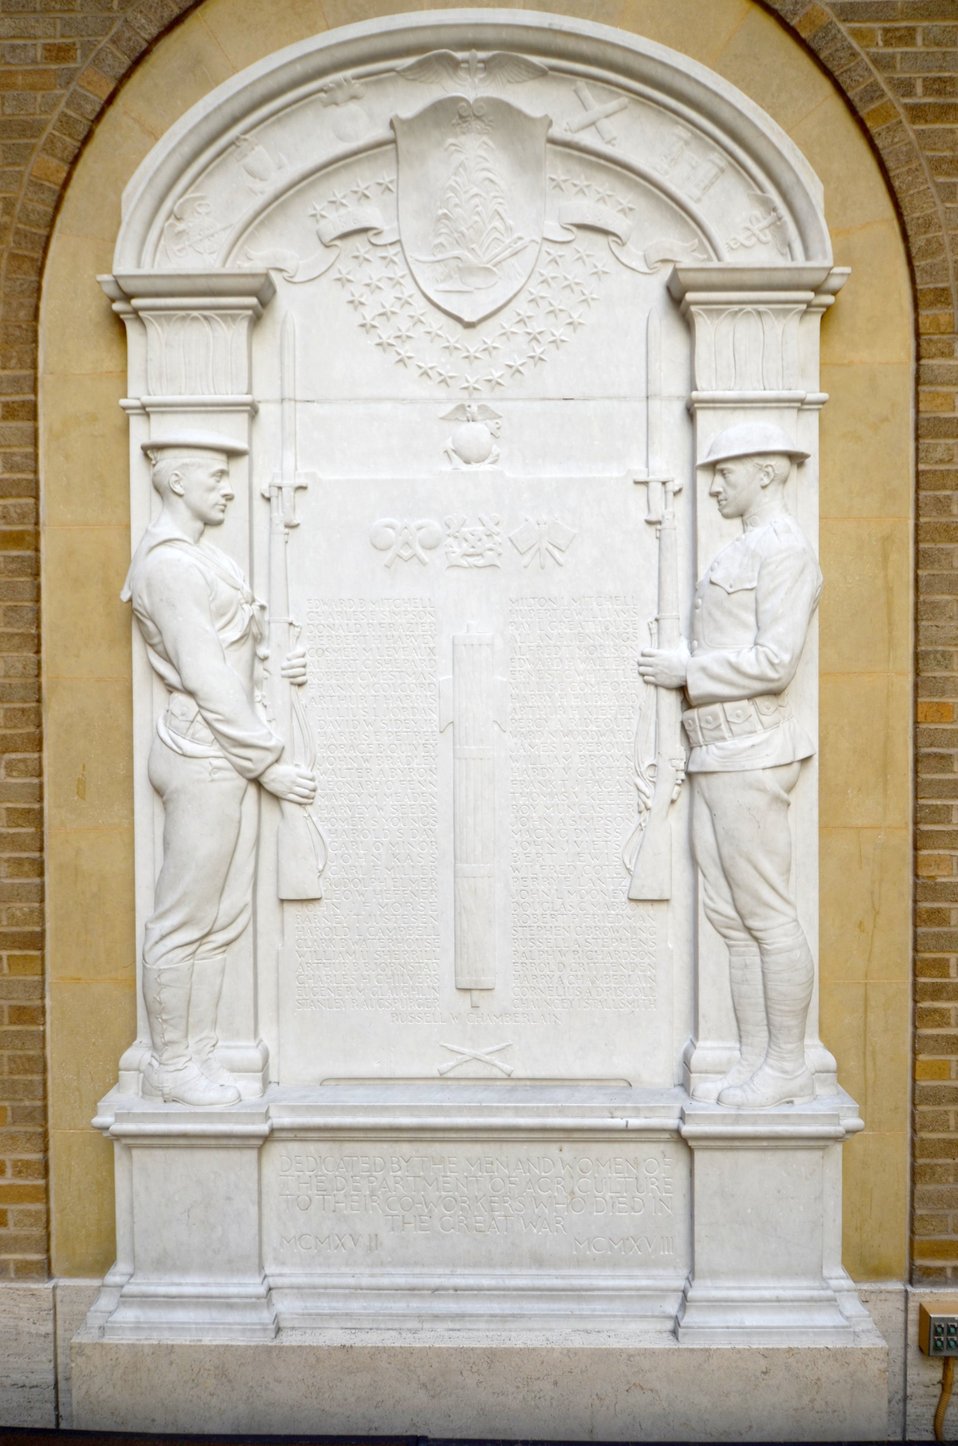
A WW I, memorial dedicated by the men and women of the Department of Agriculture to their co-workers who died in the Great War 1917-1918. At the U.S.Department of Agriculture's covered patio in the Whitten Building, in Washington, DC, on Monday Aug 1, 2011. There are the names of the 69 individuals.